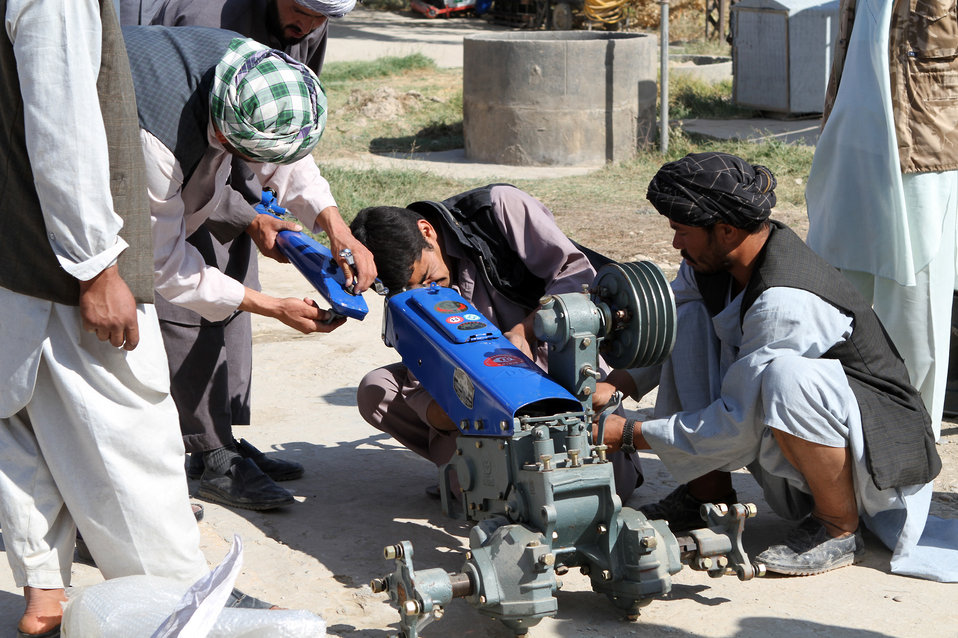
USAID funded two wheel tractor